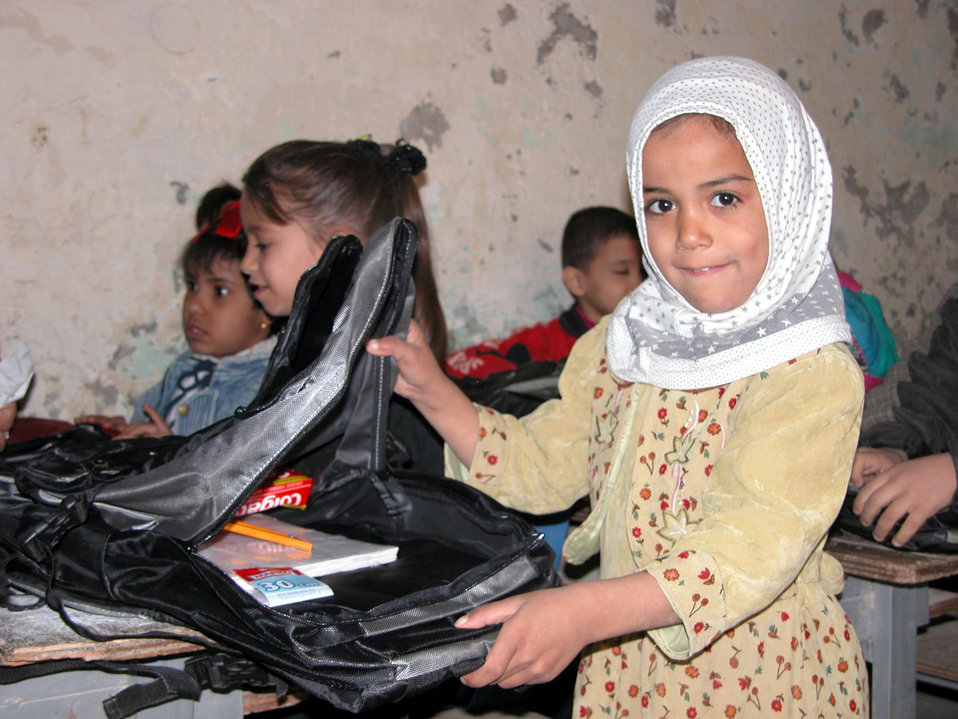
'Win the Peace' coalition delivers hope for future

NASIRIYA, Iraq -- A school girl holds open a backpack recently delivered to her and more than 200 schoolmates by 380th Air Expeditionary Wing Airmen. The backpacks were filled with school supplies and hygiene products.